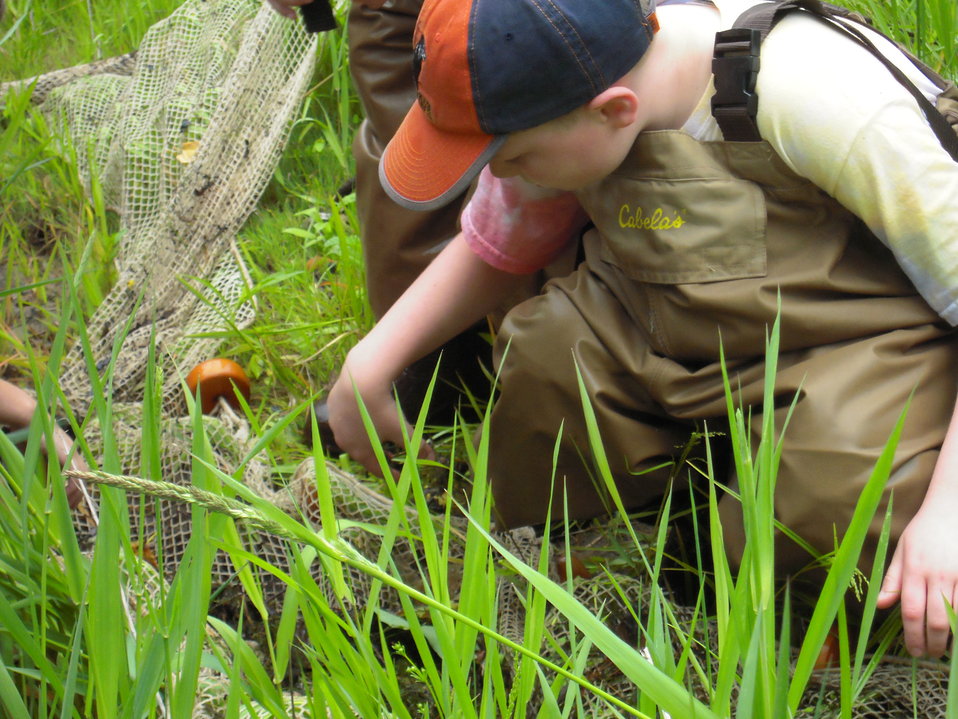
Looking through the large net